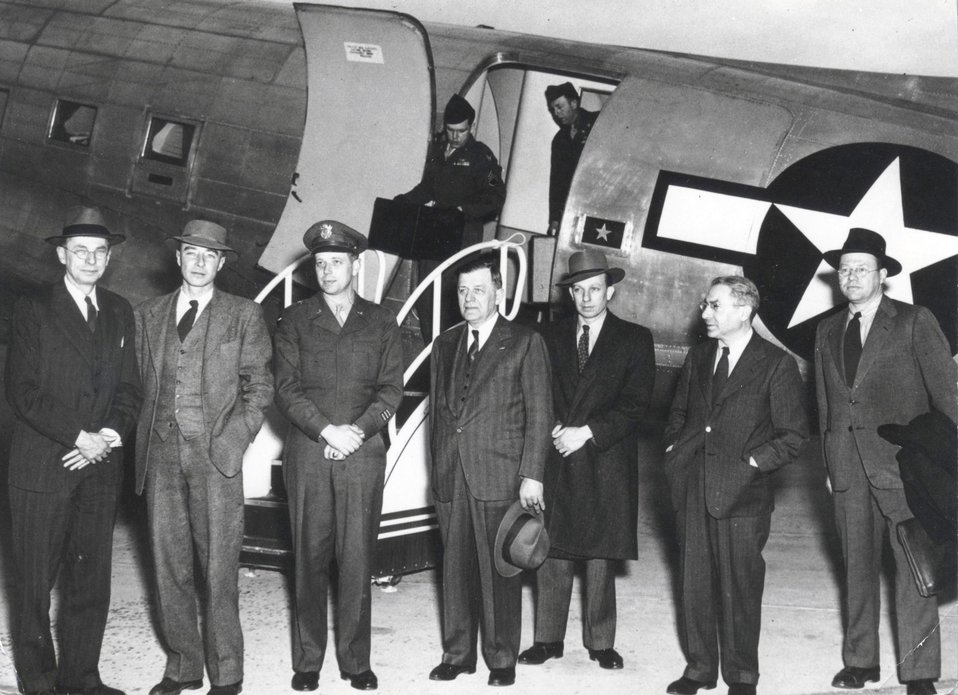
THE GENERAL ADVISORY COMMITTEE OF THE AEC